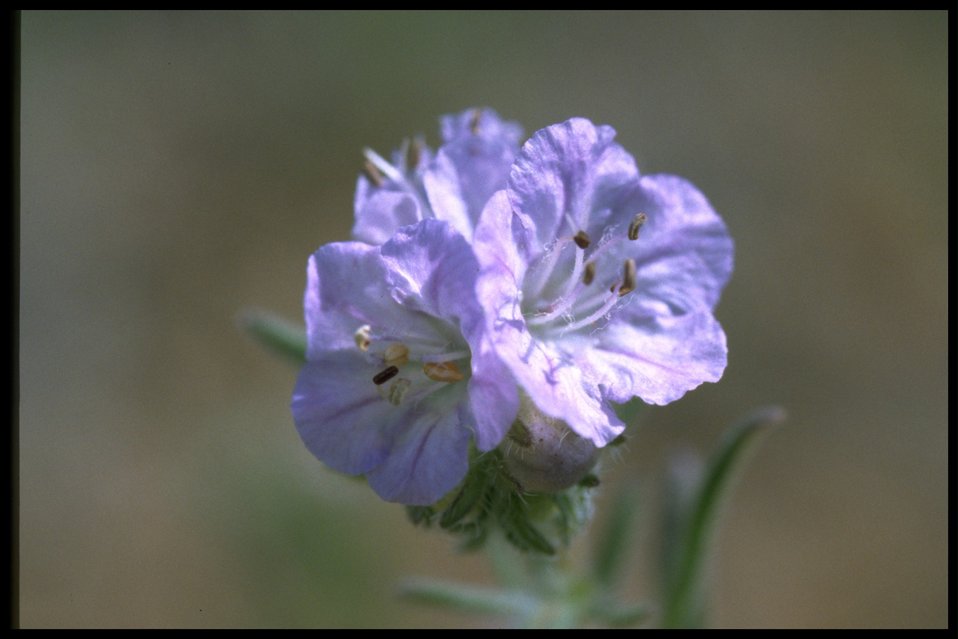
Closeup shot of Linear-leaf Phacelia wildflower.